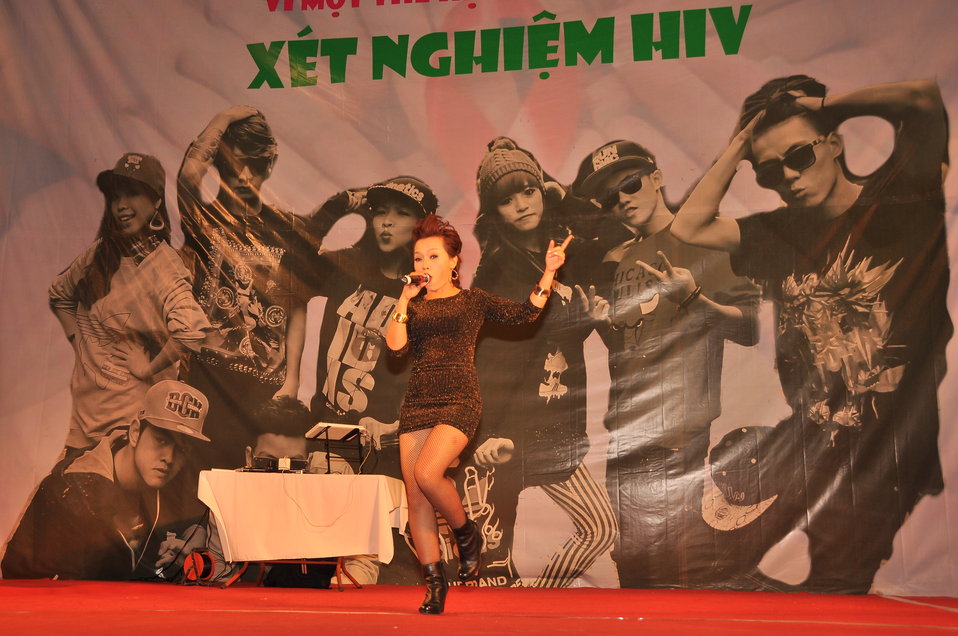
USAID and PEPFAR supports an outdoor concert to promote Vietnam's national action month for HIV

Hanoi, December 18, 2012.